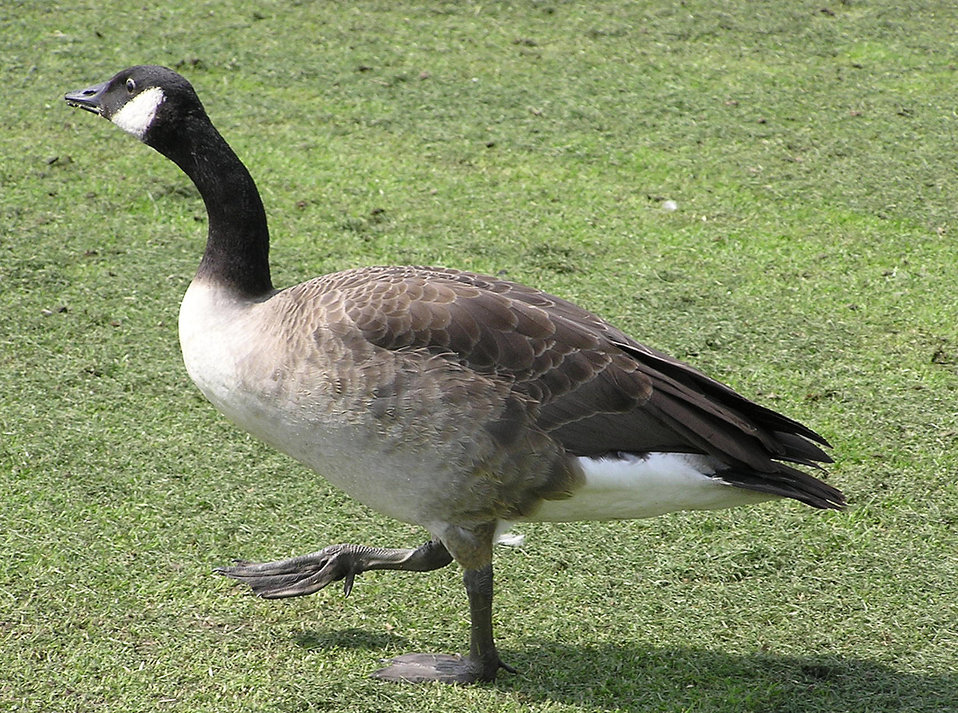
Canada Goose Branta canadensis at Avon Valley Country Park, Keynsham, Bristol, England.